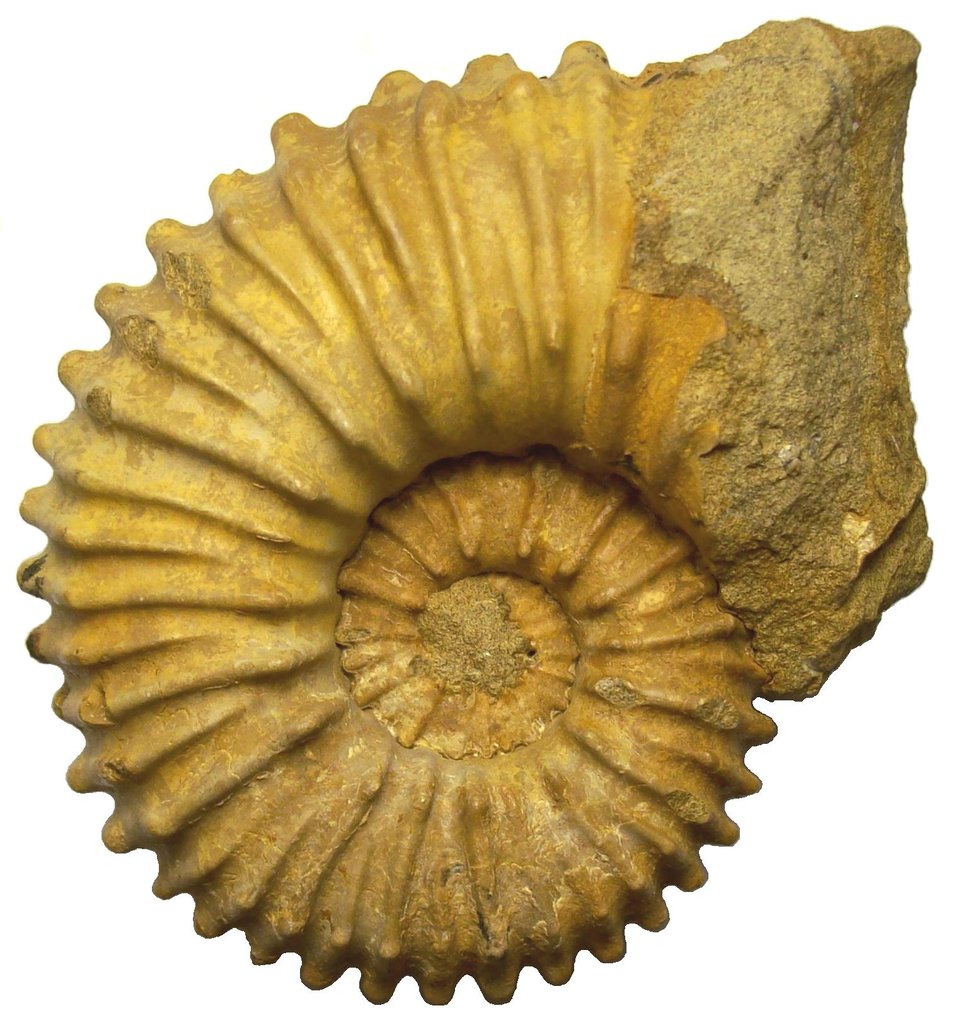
Italiano: Ammonite della specie Calycoceras (Newboldiceras) asiaticum JIMBO spinosum KOSSMAT (Madagascar). L'esemplare è una microconca. Diametro massimo: 9,7 cm Larghezza massima del giro: 5,0 cm Altezza massima del giro: 4,2 cm